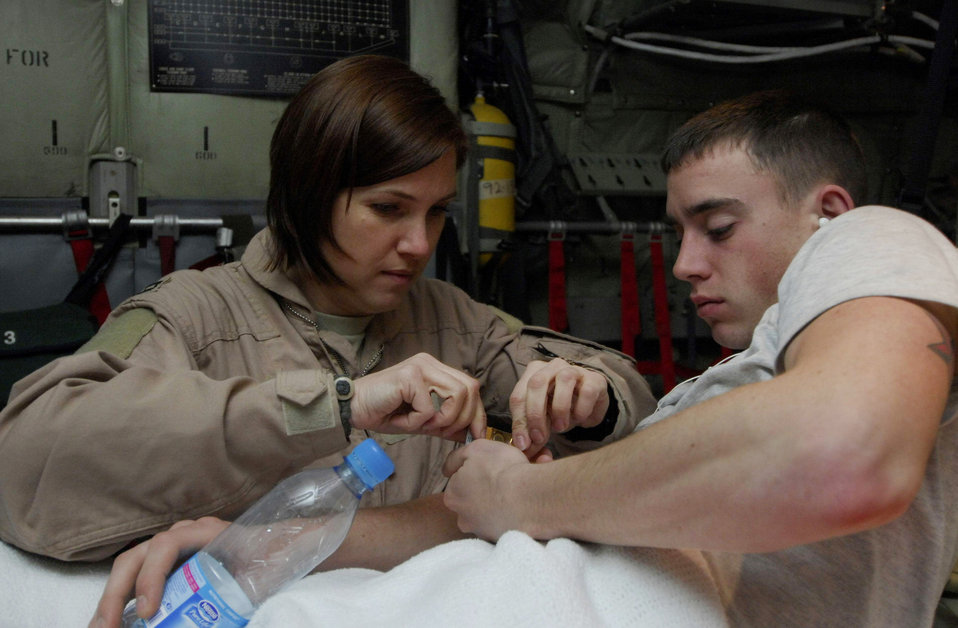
Flight nurse provides care in the air

Capt. Susan McCormick gives medicine to Airman 1st Class Brent Noah March 26 during an aeromedical evacuation flight to Bagram Airfield, Afghanistan. Airman Noah, assigned to the 376th Expeditionary Aircraft Maintenance Squadron at Manas Air Base, Kyrgyzstan, dislocated his hip and was being flown to Bagram Airfield for treatment. Captain McCormick is a flight nurse with the 455th Expeditionary Aeromedical Evacuation Flight at Bagram.